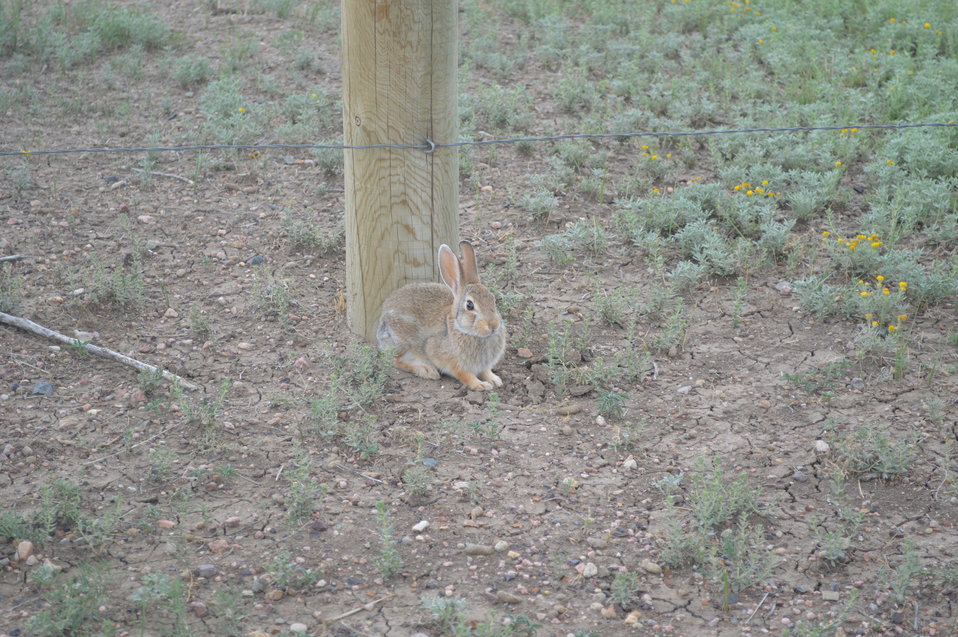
Interns visit the NBFFCC

In the summer of 2012, USFWS Region 6 interns visited the National Black-footed Ferret Conservation Center (NBFFCC) in Colorado to learn how the program reintroduces the endangered Black-footed ferret back into its native habitat.